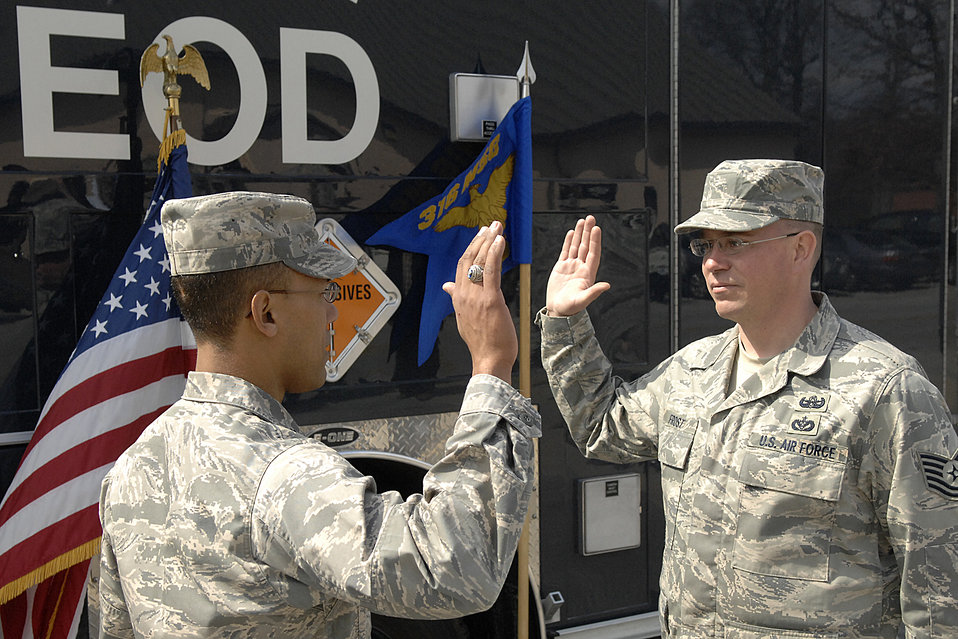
Don't call him a hero

Lt. Col. Michael Saunders re-enlists Tech. Sgt. Christopher Frost March 20 at Andrews Air Force Base, Md. Colonel Saunders is the 316th Civil Engineer Squadron commander, and Sergeant Frost is the 316th CES NCO in charge of Explosive Ordnance Disposal Flight.